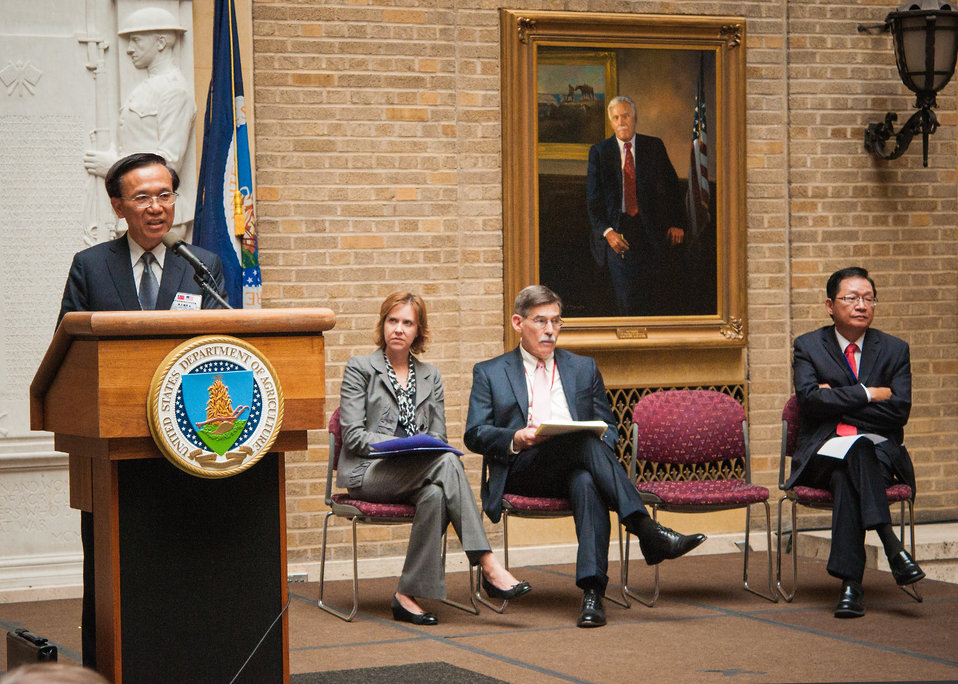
From left: Wen-Deh Chen, President of Taiwan Grains and Feed Development Foundation and Vice Minister, Taiwan Council of Agriculture, Deputy Undersecretary, Farm and Foreign Agricultural Services Darcy Vetter, Rick Ruzicka, Director for Trade and Commercial Programs, American Institute in Taiwan and Chen-Jan Lee, Deputy Representative, Taipei Economic and Cultural Representative Office. The United States Department of Agriculture hosted representatives of the Taiwan 2013 Goodwill Trade Mission in Washington, DC, Mon. Sept. 9, 2013.